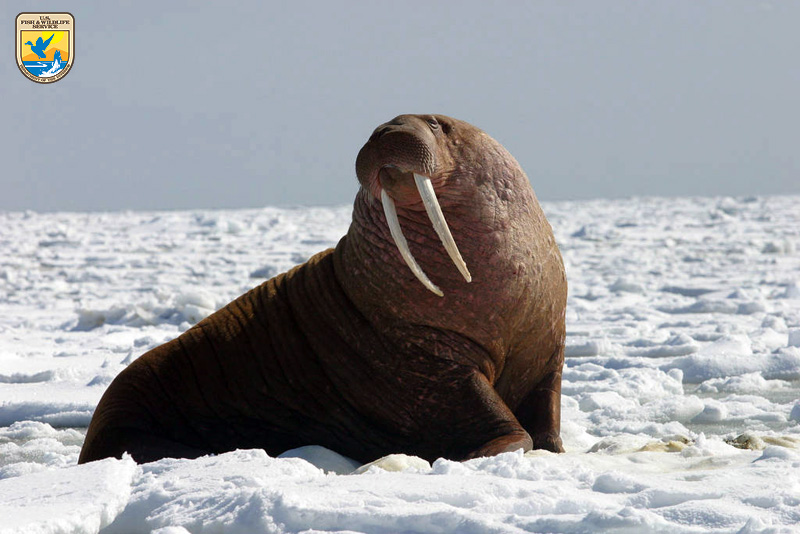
Pacific Walrus - Bull

A large Pacific Walrus bull watches the camera. The adult bulls can weigh up to 3,700 pounds.